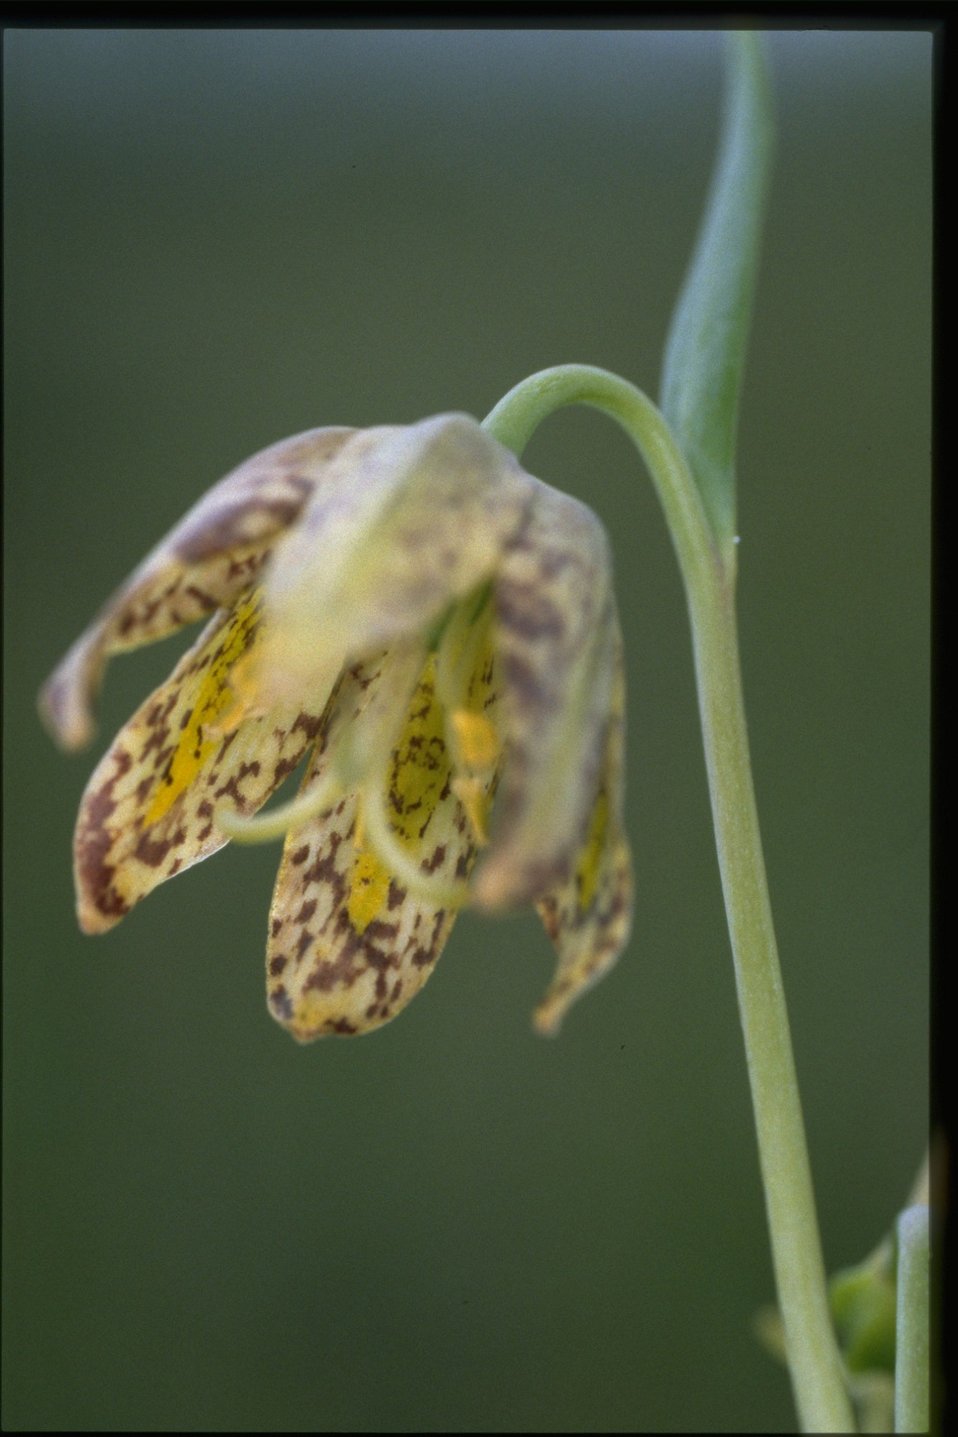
Closeup shot of Fritilaria affine.